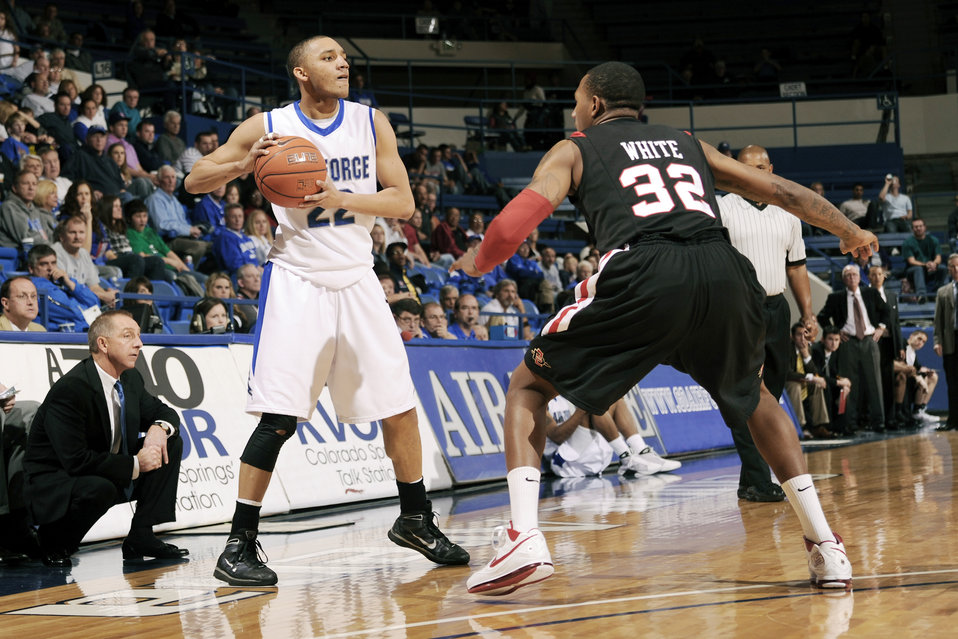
Air Force basketball falls to San Diego, 61-42.

Avery Merriex, a senior guard for the Falcons, looks to pass the ball toward the basket as San Diego's Billy White, a junior forward, defends during game against San Diego March 6, 2010, at the U.S. Air Force Academy's Clune Arena in Colorado.